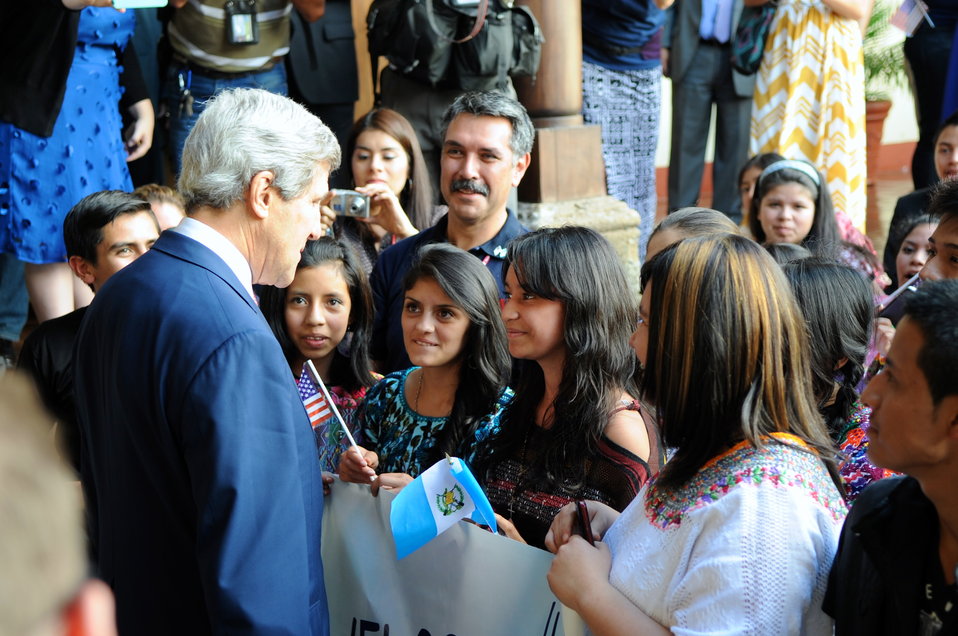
Secretary Kerry Greets Guatemalan Students

U.S. Secretary of State John Kerry greets local students who participated in a State Department school program in Antigua, Guatemala, on June 5, 2013.